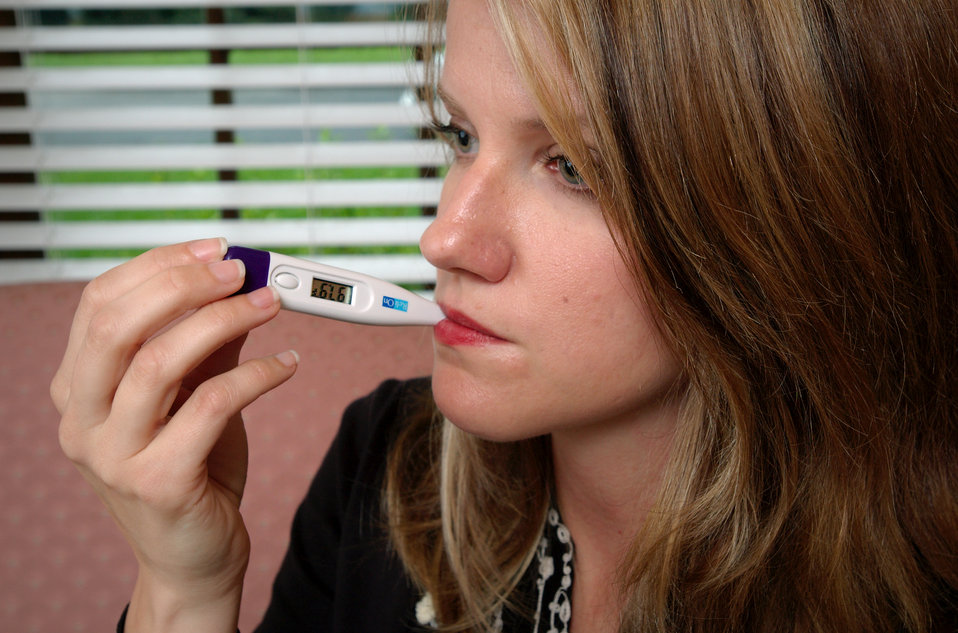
A woman taking her temperature

This photograph depicted a woman who was using a modern, battery-powered oral thermometer, in order to measure her body temperature. In order to return an accurate reading, this particular type of thermometer needed to be placed beneath the user's tongue, for a set amount of time, beeping when the ambient, sublingual temperature was reached.